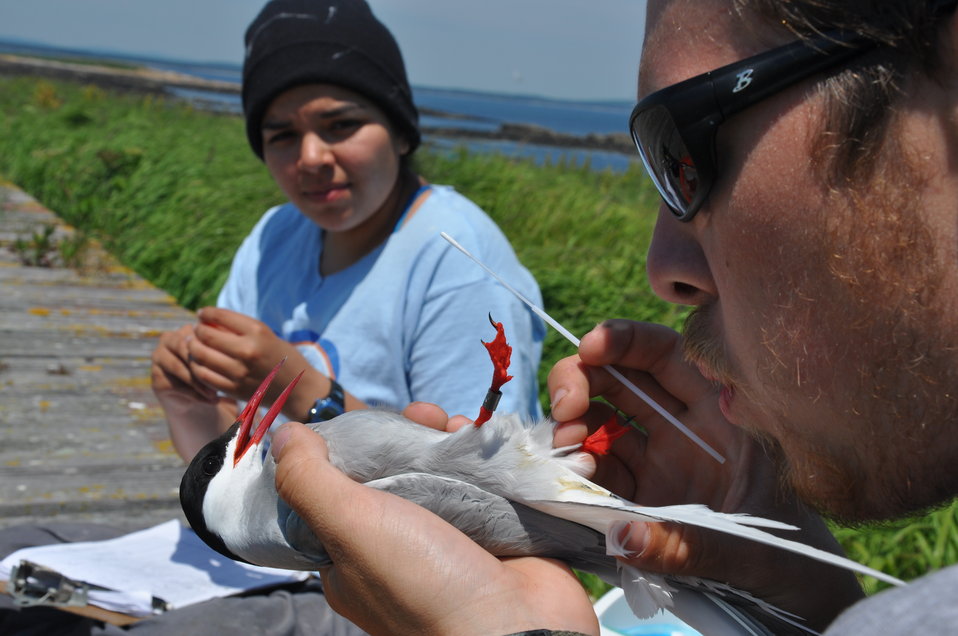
Locating Cloaca on Tern for a Sample

Petit Manan Island, Maine Coastal Islands NWR. Summer with the Seabirds blog: mainecoastalislands.wordpress.com/2010/08/01/terns/